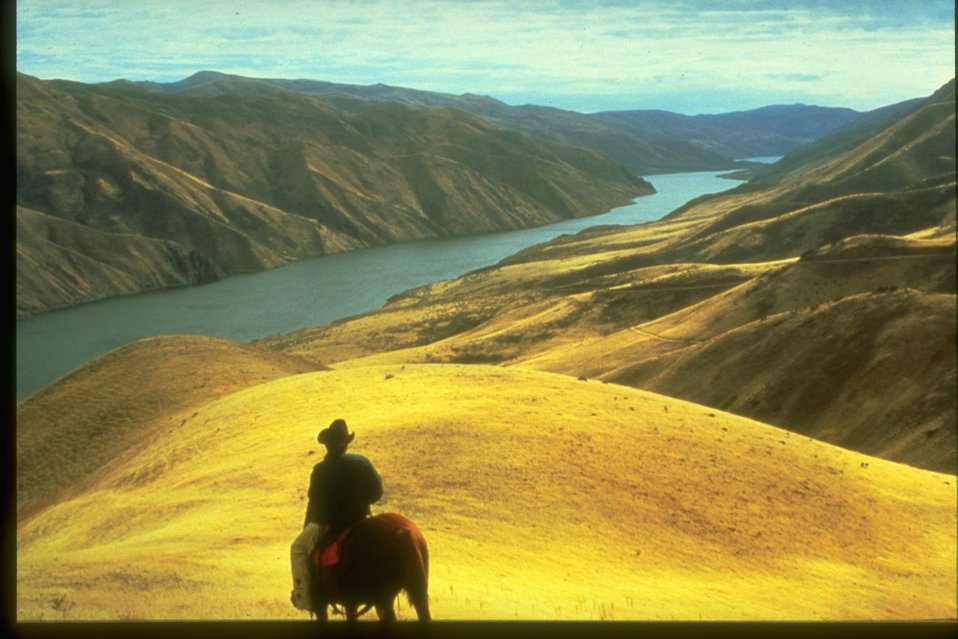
Along Snake River at Kniesel, a rancher is viewing his vast stands of medusahead (a noxious weed).